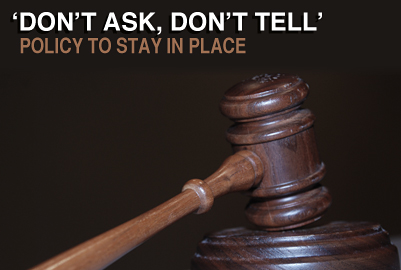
Don't ask